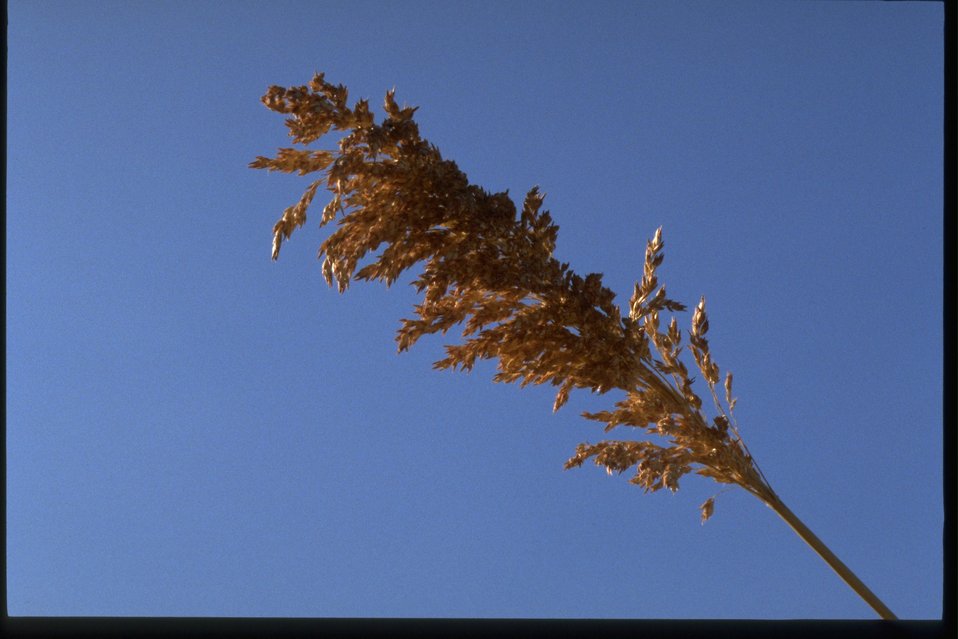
Milo seed head in John Day River area.